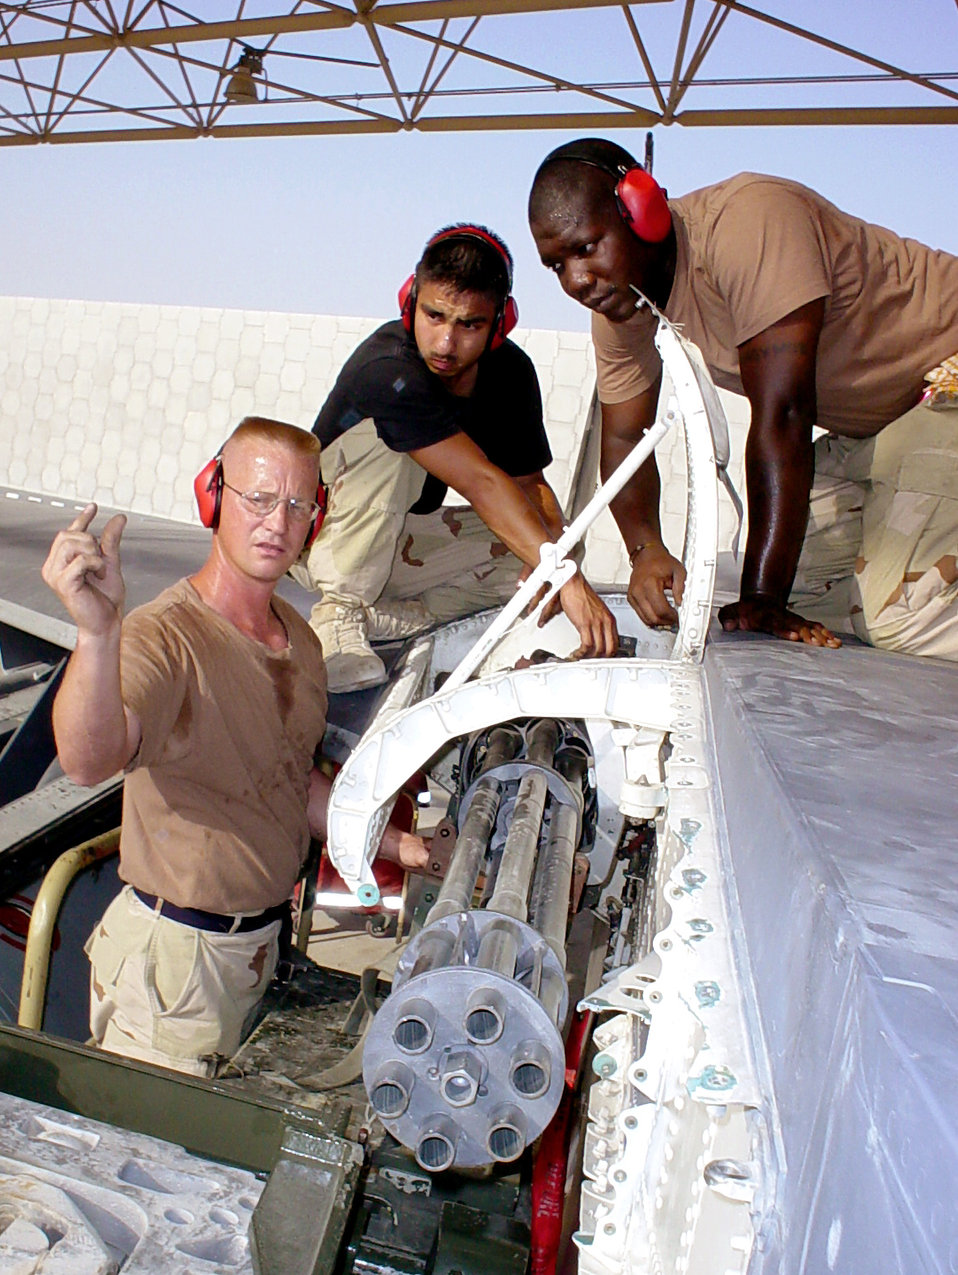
Weapon check

SOUTHWEST ASIA -- Master Sgt. Scott Lemak (left) guides a vehicle operator as Senior Airman Nicholas Surita (center) and Staff Sgt. Maurice Williams help remove an M-61A1 gun from an F-15E Strike Eagle. The airmen are deployed from the 494th Fighter Squadron at Royal Air Force Lakenheath, England. Lemak is a weapons flight chief, Surita is a weapons loader, and Williams is a weapons-load team chief.